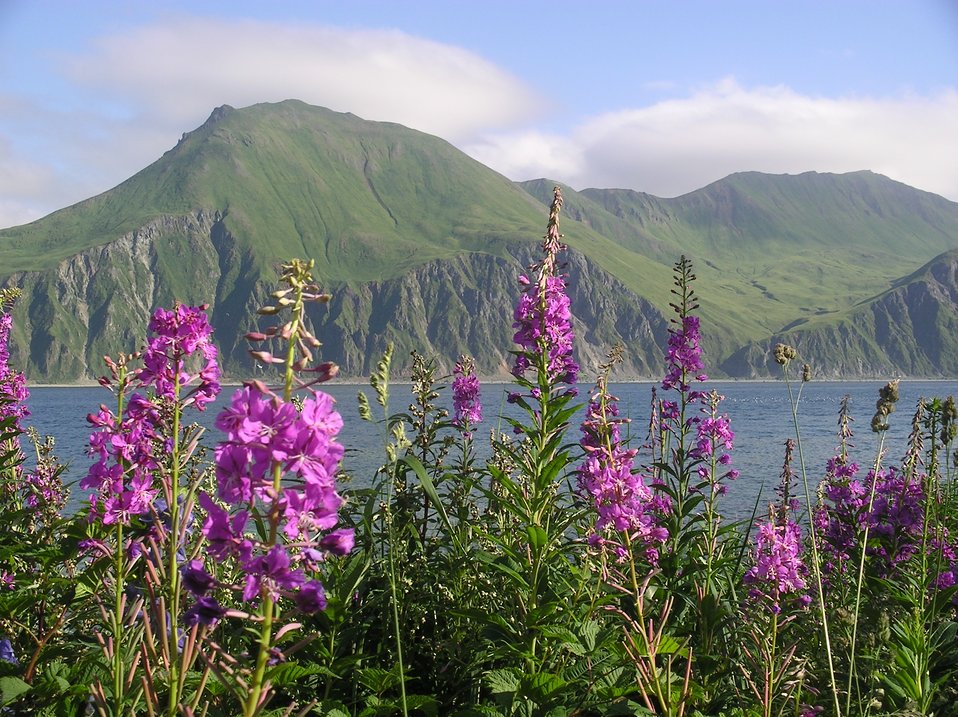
The Pass at Dutch Harbor seen through a stand of lupin.